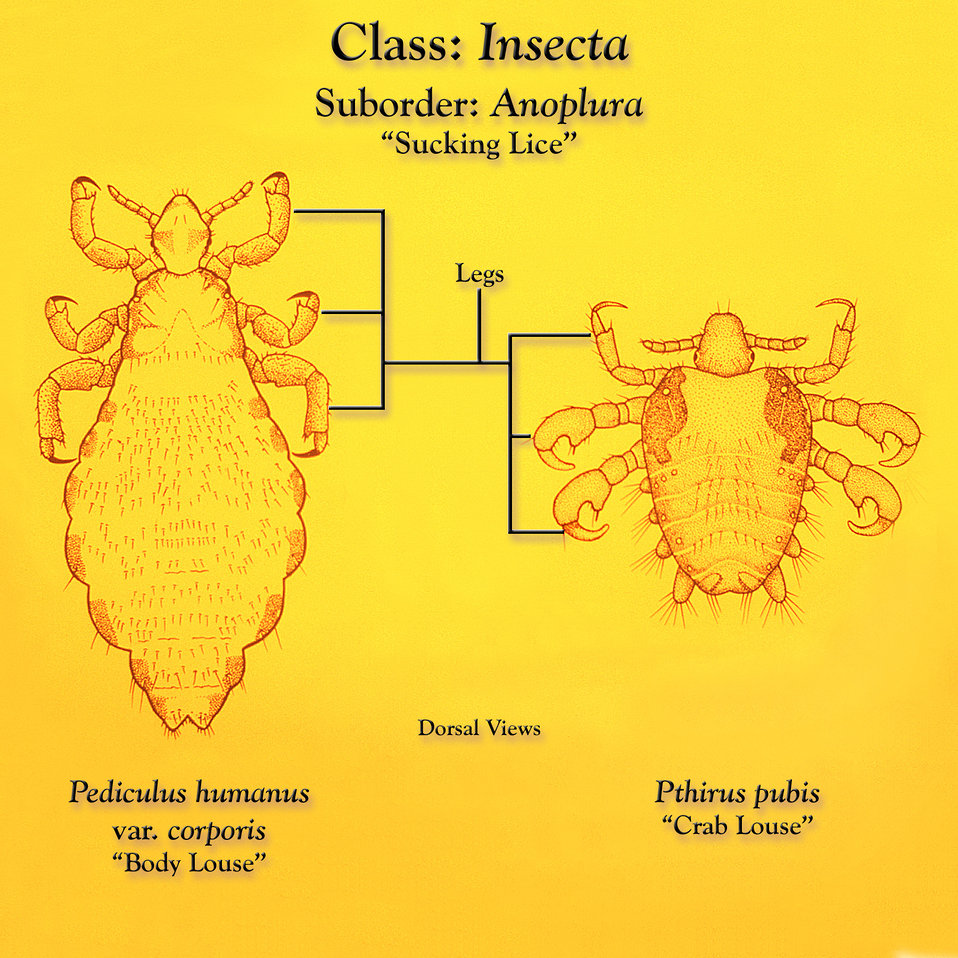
This illustration depicts a dorsal view of a 'body louse', Pediculus humanus var. corporis (Lt), and a 'crab louse', Pthirus pubis (Rt).